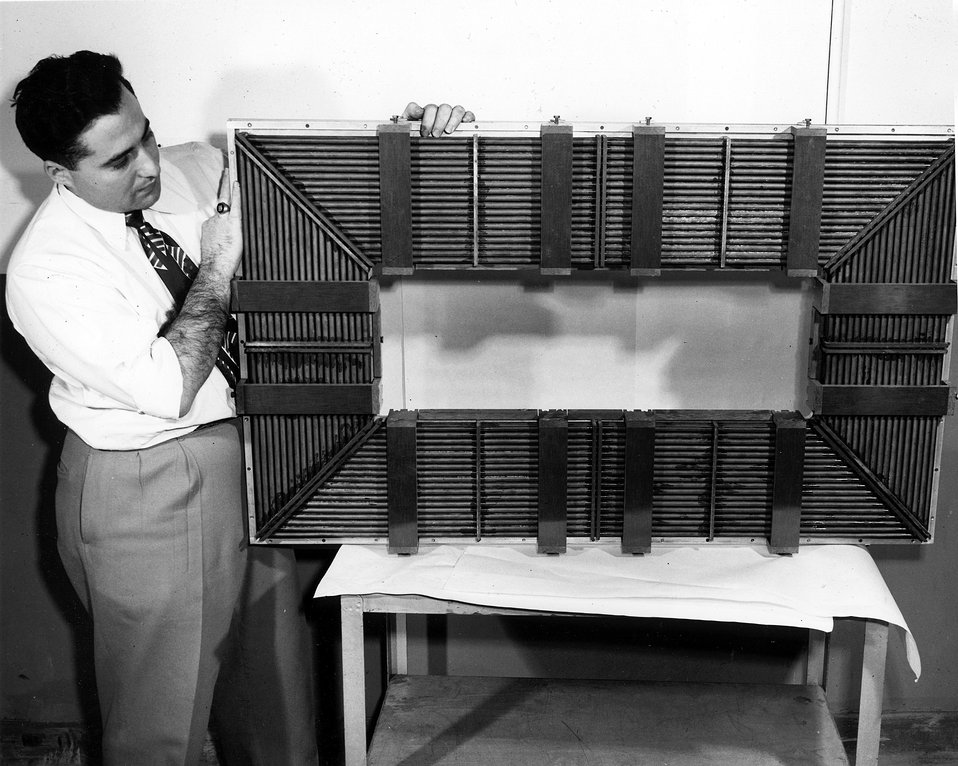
One section of core material for the ferrite cavity. c. 1950